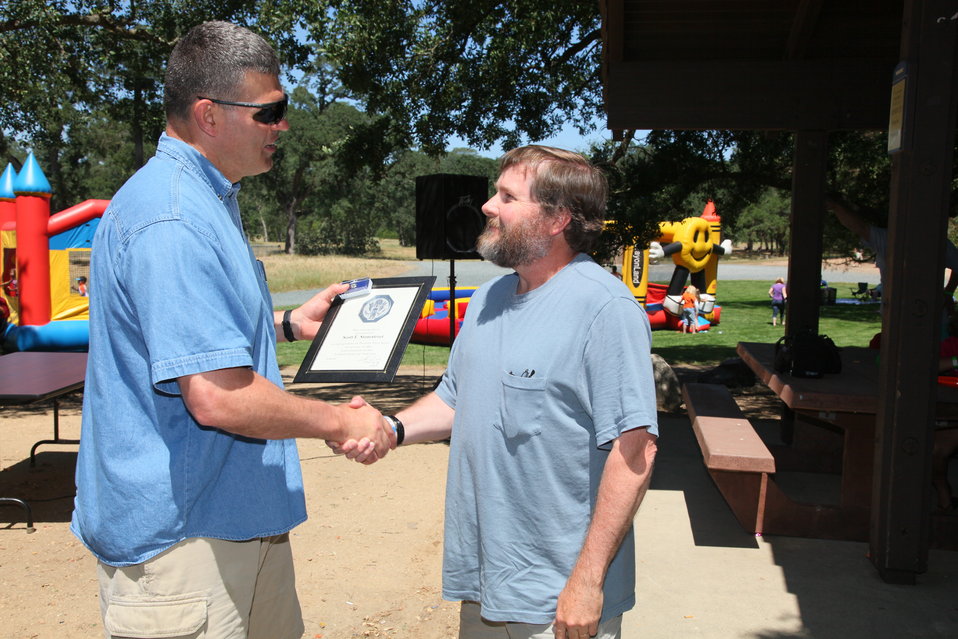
2011 Annual Picnic